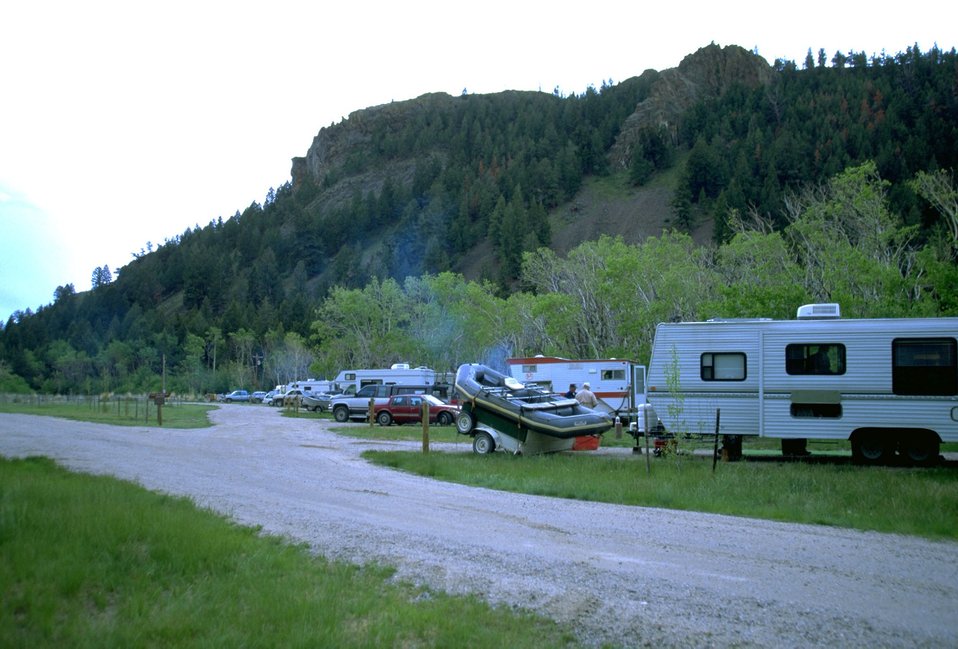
Camping below the hills at Divide Campground